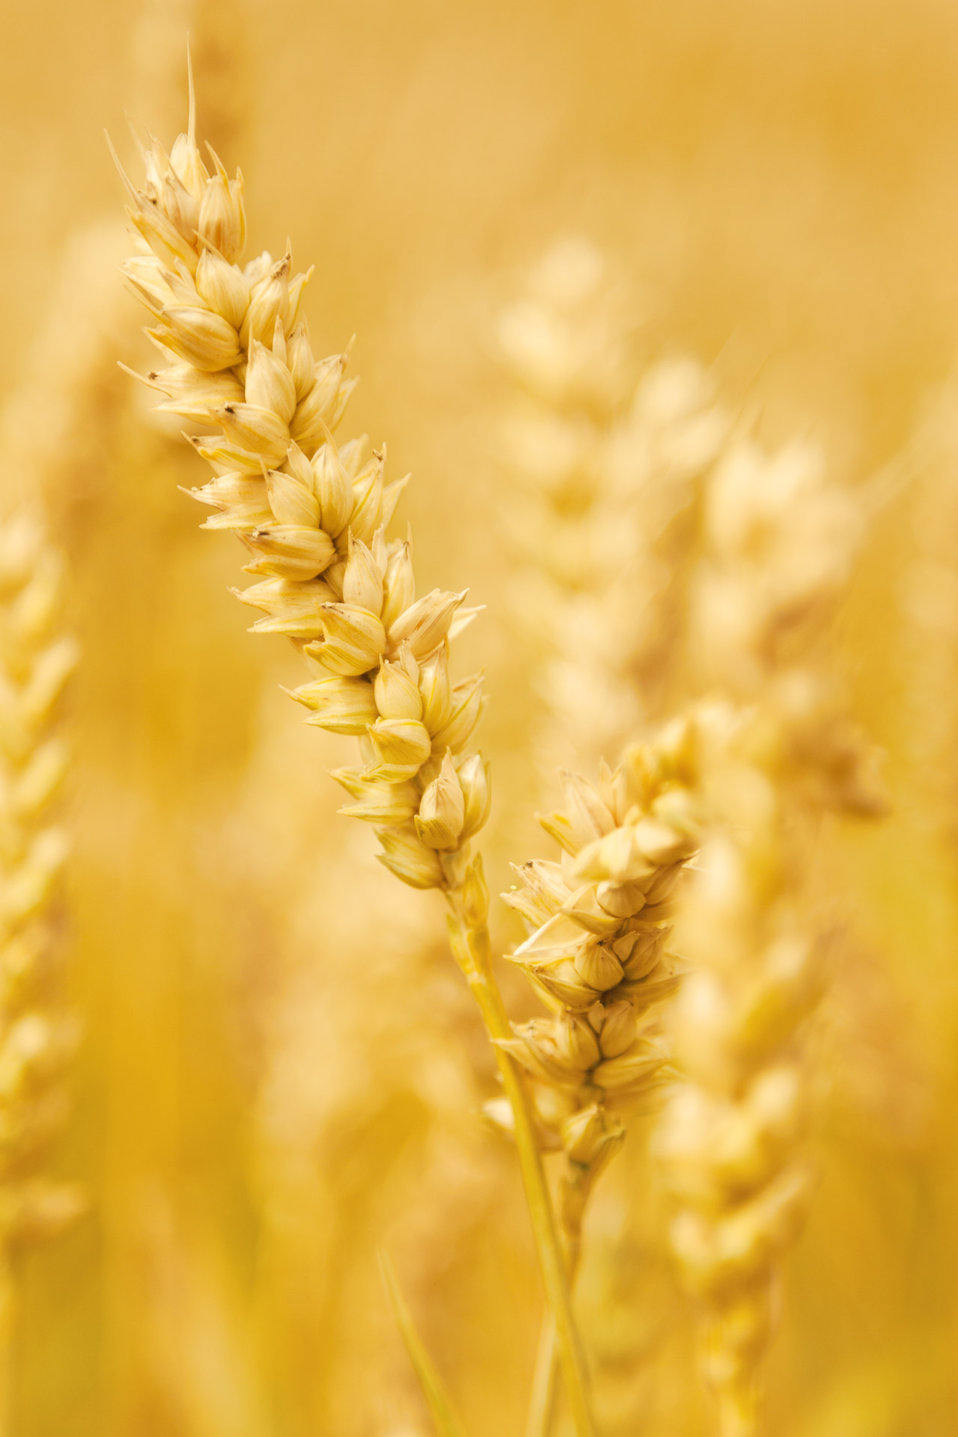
Yellow grain growing on a field.